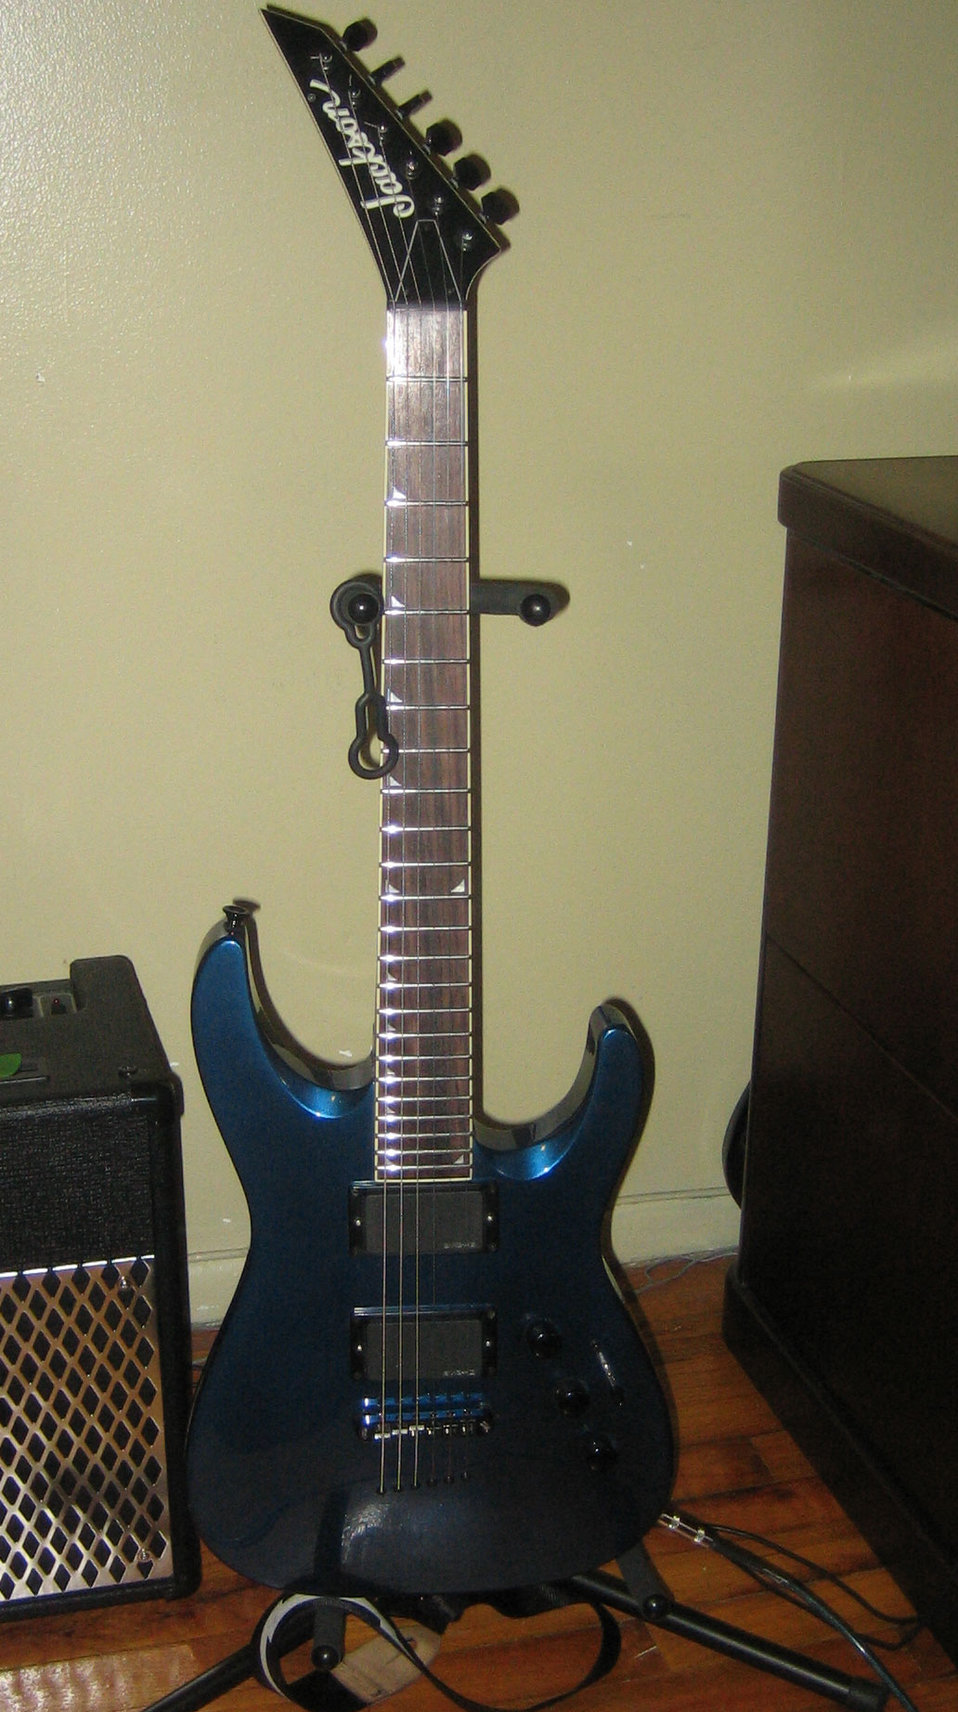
Taken by me on May 8, 2006.